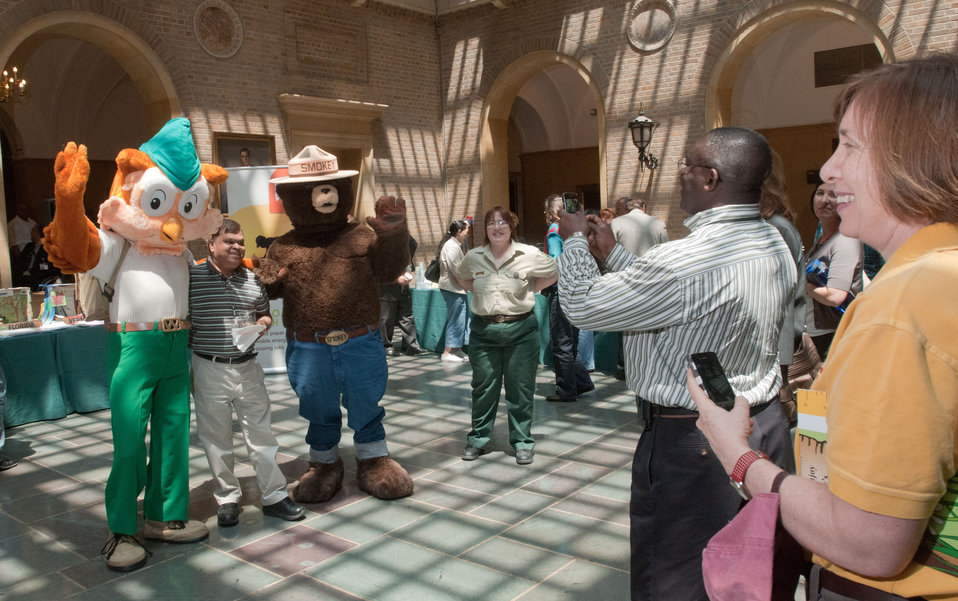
Guests take their photo with Woodsy Owl and Smokey Bear at International Year of Forests (IYOF) on Friday, June 3, 2011 in the Patio of the Whitten Building, Washington, DC.